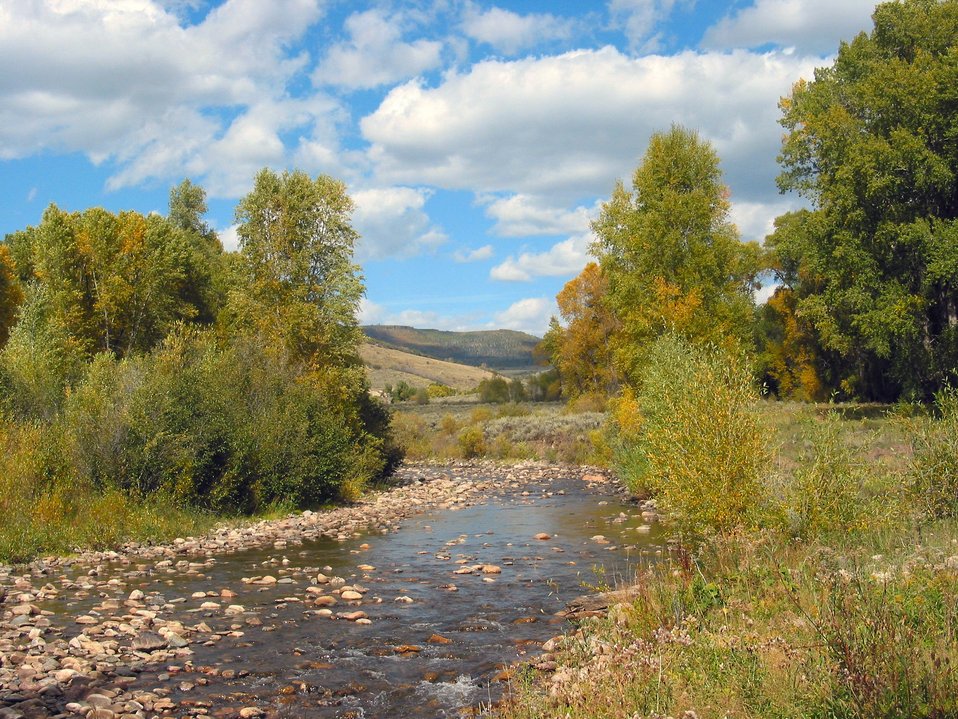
Riverine Habitat Restoration

Restoration of riverine habitat by the Wyoming PFW program along Battle Creek near the town of Savery.